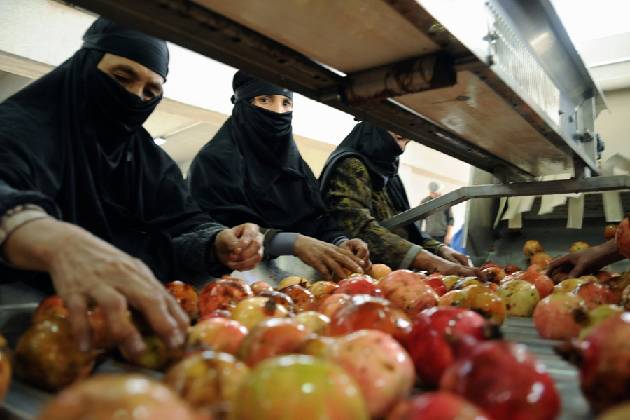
ASAP Juice Factory 2009 4